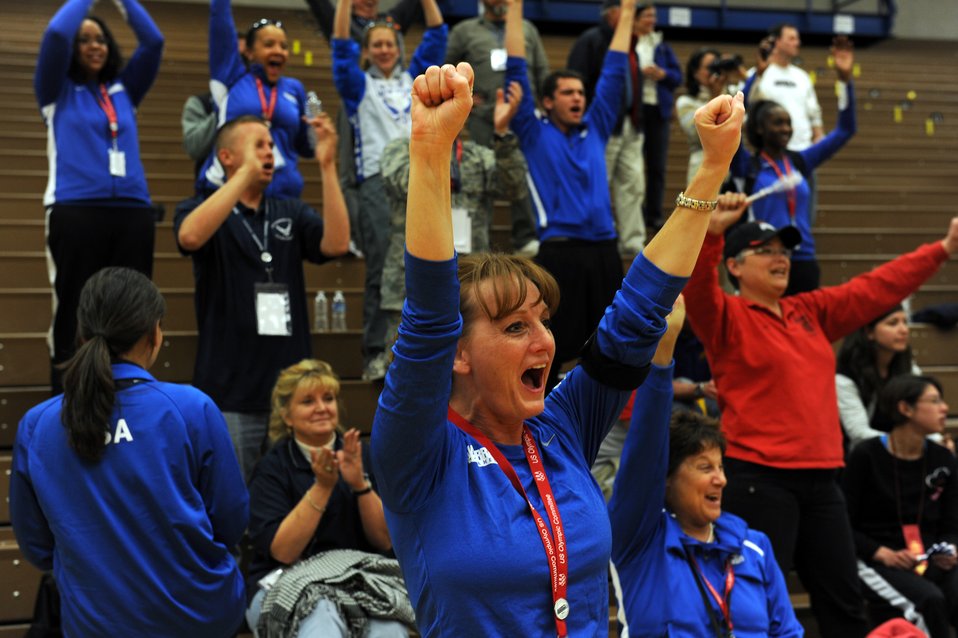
AF Basketball

Team Air Force fans celebrate after the Warrior Games bronze medal match against the Navy May 12, 2010 at the Olympic Training Center, Colorado Springs. The Air Force went on to win the game 13-10. The Warrior Games competition began May 10 and finishes on May 14, 2010 at the U.S. Olympic Training Center in Colorado Springs.